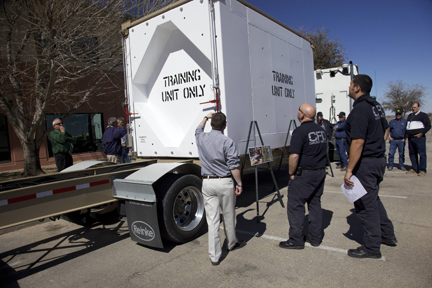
Recovery Act Funds New Transuranic Waste Transportation Packages

Members of the public listen to a presentation about the new TRUPACT-III transportation packages funded by the Recovery Act during a road show hosted by the Carlsbad Field Office.
Known as TRUPACT-III, the packages will be used by the Savannah River Site in South Carolina for shipping large waste containers that don’t fit in existing transportation packages, called TRUPACT-II.